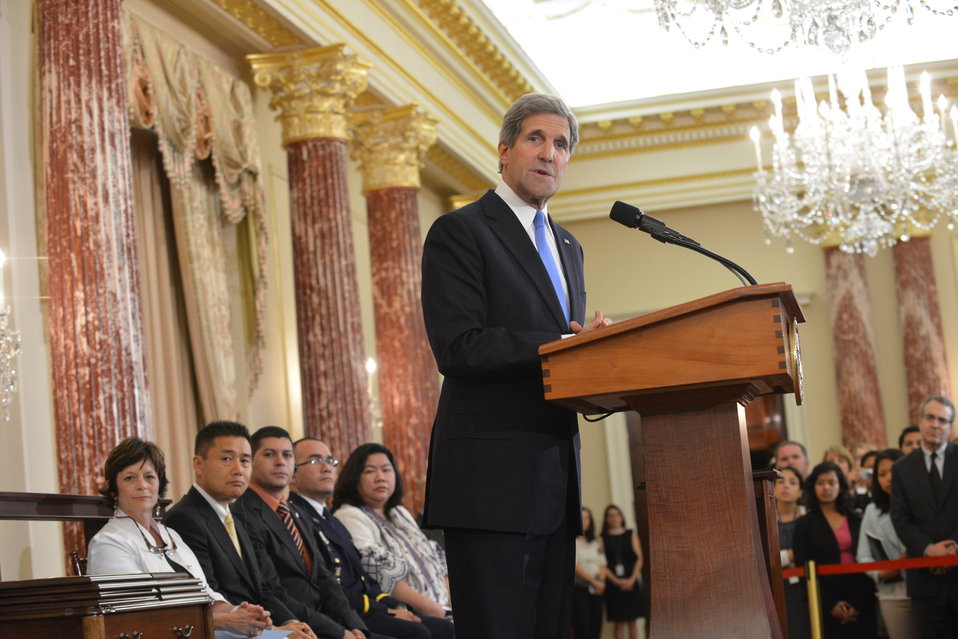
Secretary Kerry Releases the 2013 Trafficking in Persons Report

U.S. Secretary of State John Kerry releases the 2013 Trafficking in Persons (TIP) Report and honors the 2013 TIP Report Heroes, men and women whose personal efforts have made an extraordinary difference in the global fight against modern slavery, at the U.S. Department of State in Washington, D.C., on June 19, 2013.